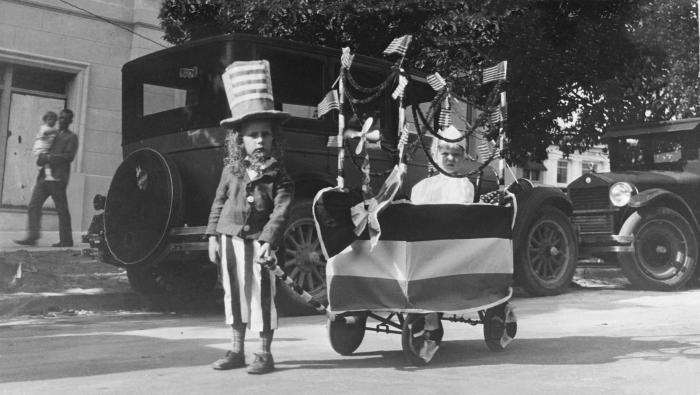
This historic photograph depicted two children, one pulling the other in a homemade parade float, constructed in observance of 'Child Health Day'. The setting was the state of Florida. The original image was scanned from a glass lantern slide donated by the Minnesota Department of Health, and is one of a historical collection of documents and photographs devoted to observances of Child Health Day in the United States. A very patriotic costume was warn by the child pulling the float that carried a young girl surrounded by American flags.